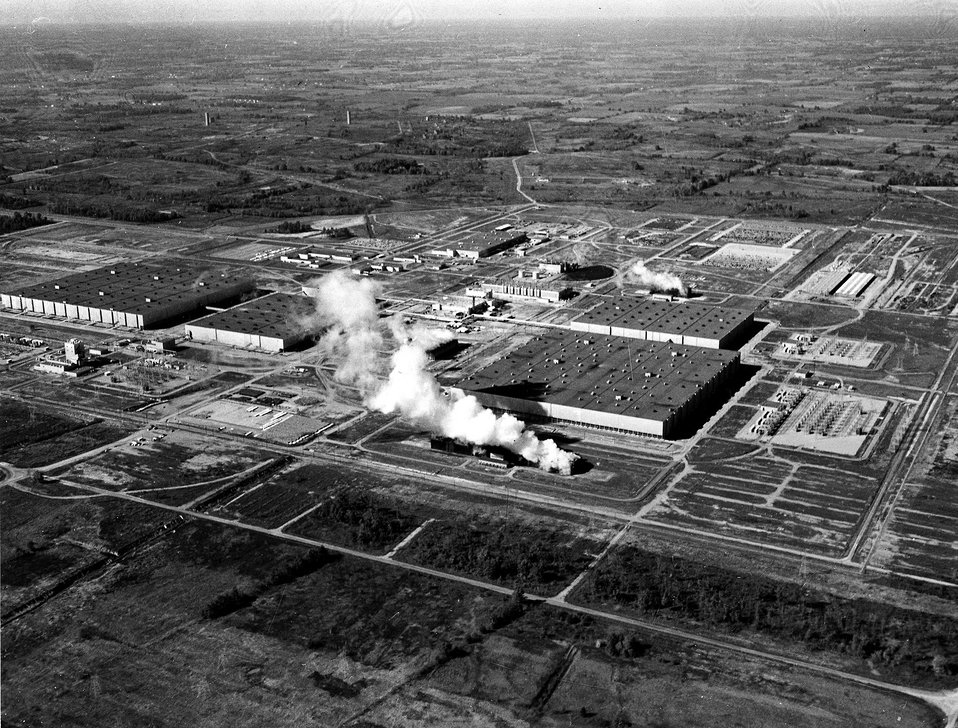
PADUCAH, KENTUCKY...This is the Atomic Energy Commission's sprawling gaseous diffusion plant near Paducah, Kentucky.